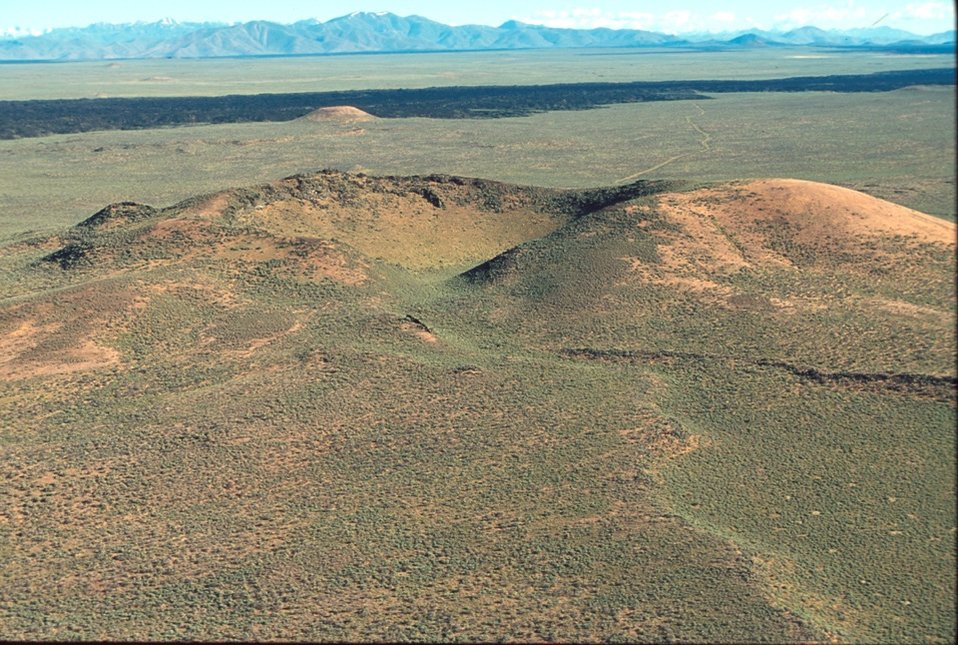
Shoshone Field Office USRD Upper Snake River District